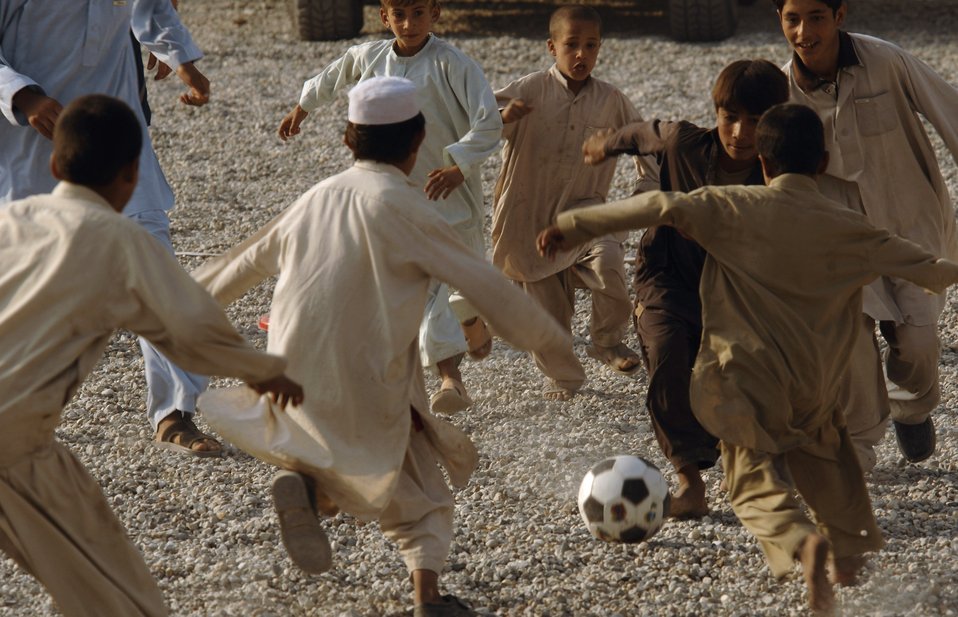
Having a ball

Army and Air Force members from the Nangarhar Provincial Reconstruction Team and Afghan children play soccer together Nov. 9 at the PRT forward operating base in Jalalabad, Afghanistan. The Nangarhar PRT is a joint team of Airmen, Soldiers and representatives from the U.S. Department of State, U.S. Agency for International Development and the U.S. Department of Agriculture. The team is responsible for helping the Islamic Republic of Afghanistan government improve security, governance and promote reconstruction in the Nangarhar Province. PRT members assess community needs and then builds schools, government centers, roads, medical capability and basic infrastructure throughout Nangarhar. Unit members also mentor Afghan government officials and security forces to provide the Afghan people with the state representation and security they need.